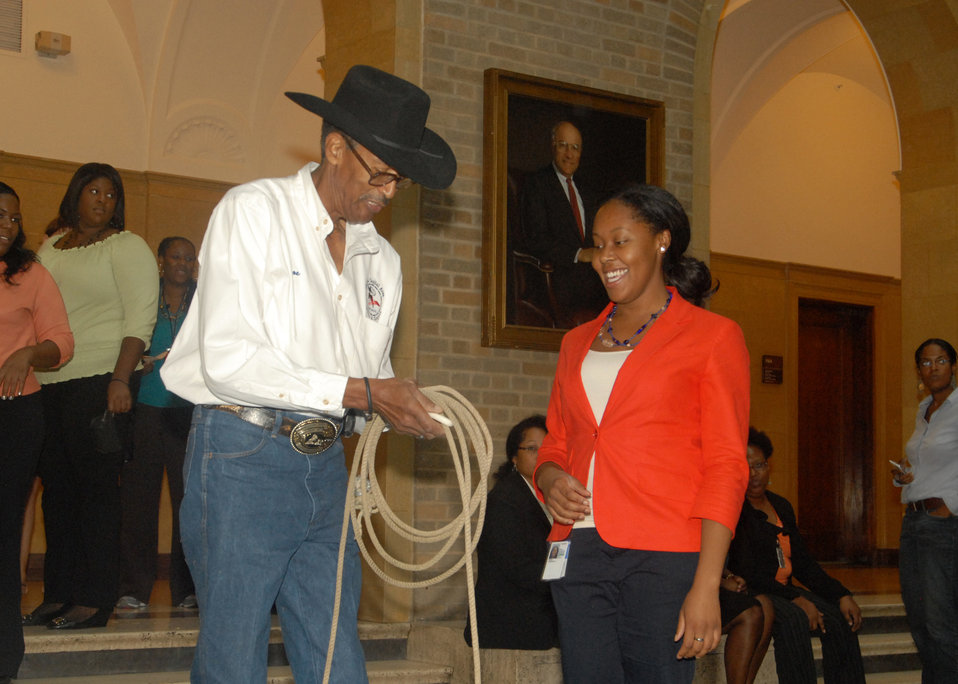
U.S. Department of Agriculture (USDA) employee Joe Louis teaches another USDA employee how to use a lasso at the U.S. Department of Agriculture’s (USDA) opening ceremony for the 2012 Combined Federal Campaign on Tuesday, Sept. 18, 2012 at the USDA Whitten Building, in Washington, D.C. USDA has set a goal of raising just under $2 million from their employees in the national capital area. The theme for this year’s CFC campaign is “Choose Hope”.